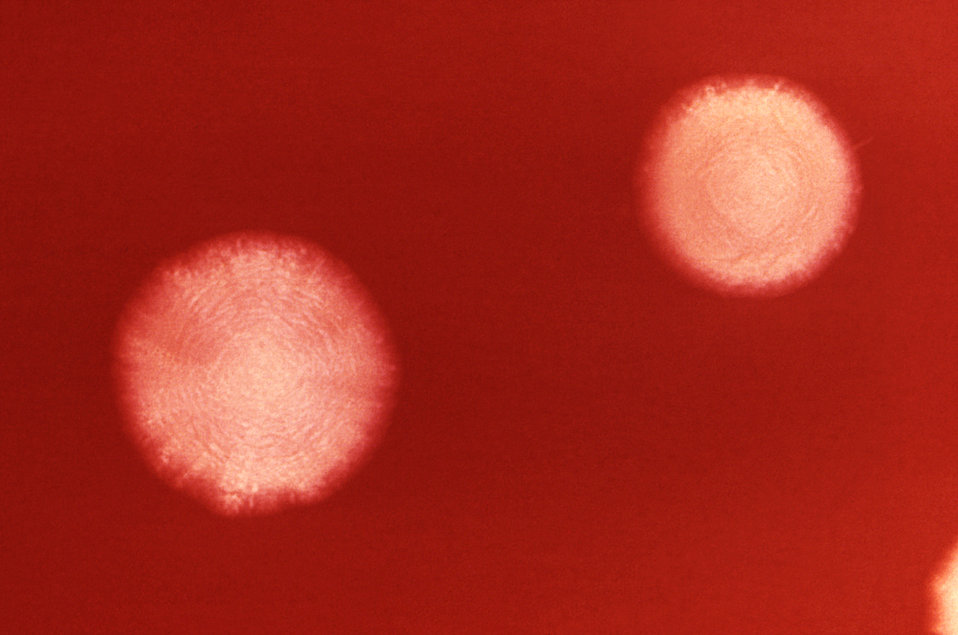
This 1972 photograph depicts two Bacteroides fragilis subsp. fragilis bacterial colonies grown on blood agar medium for 48 hours.